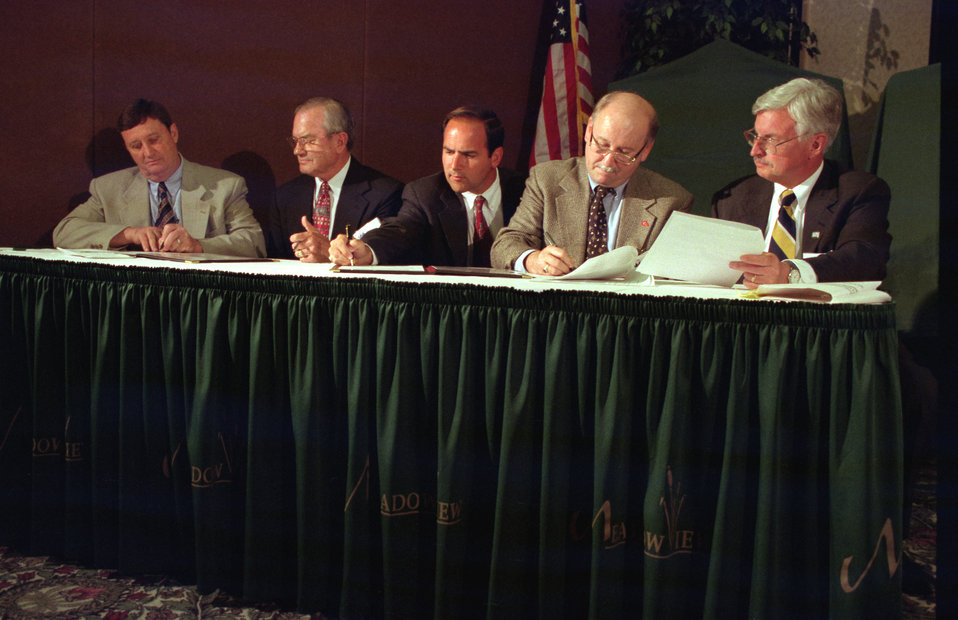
Tri-City Summit at Kingsport

98-192-24 DOE photo by Lynn Freeny

Tri-City Summit at Kingsport Tennessee 5-27-1998